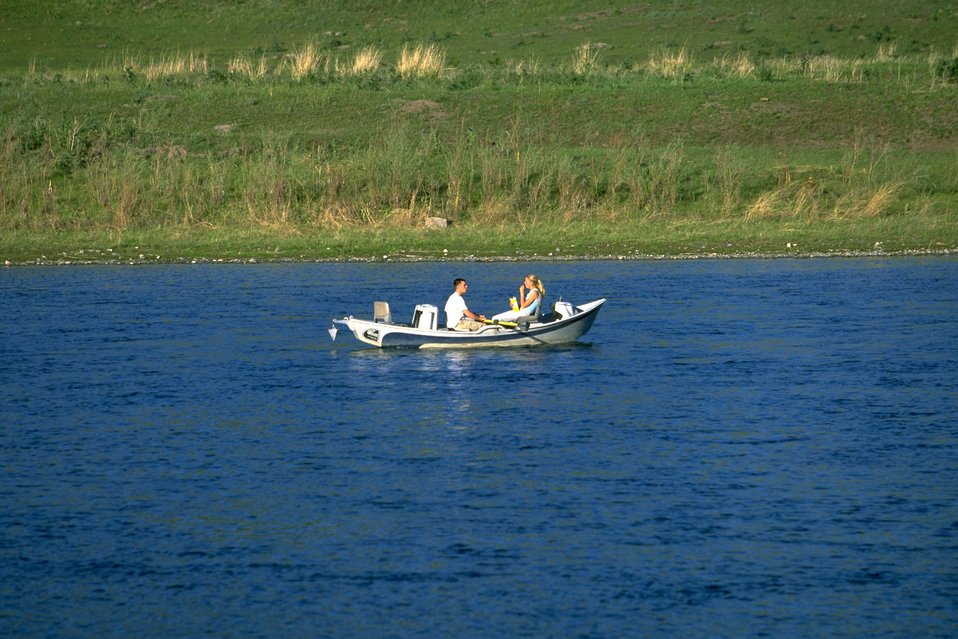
Boaters on the Missouri River